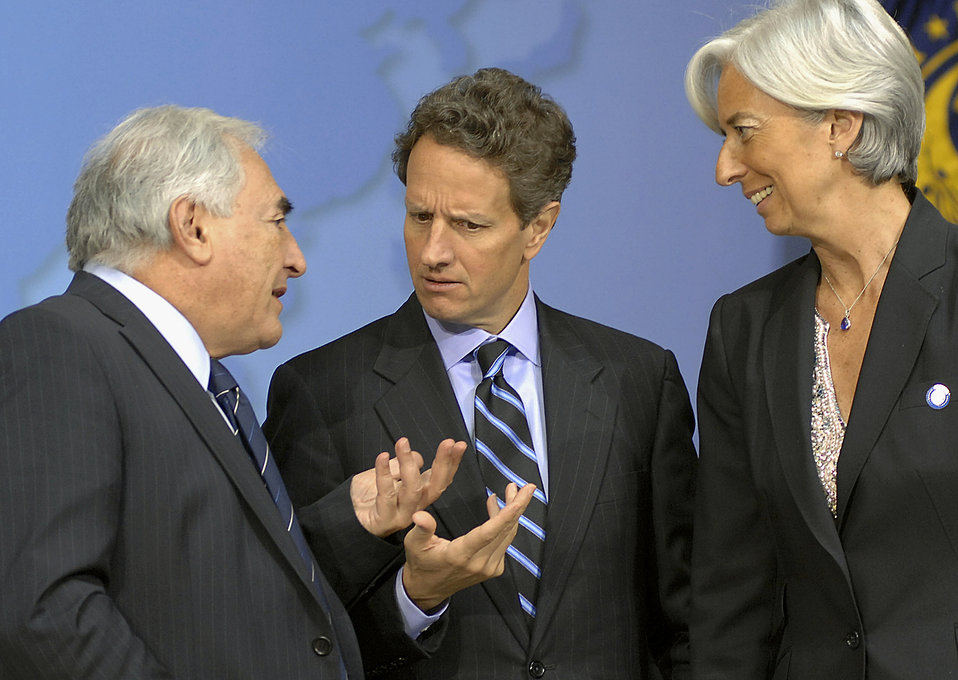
G-20 Finance Ministers and Central Bank Governors' Meeting, 4/23/10

Treasury Secretary Geithner with Managing Director of the International Monetary Fund Dominique Strauss-Kahn (L) and Minister of Economic Affairs, Industry and Employment of France Christine Lagarde at the IMF on April 23, 2010.